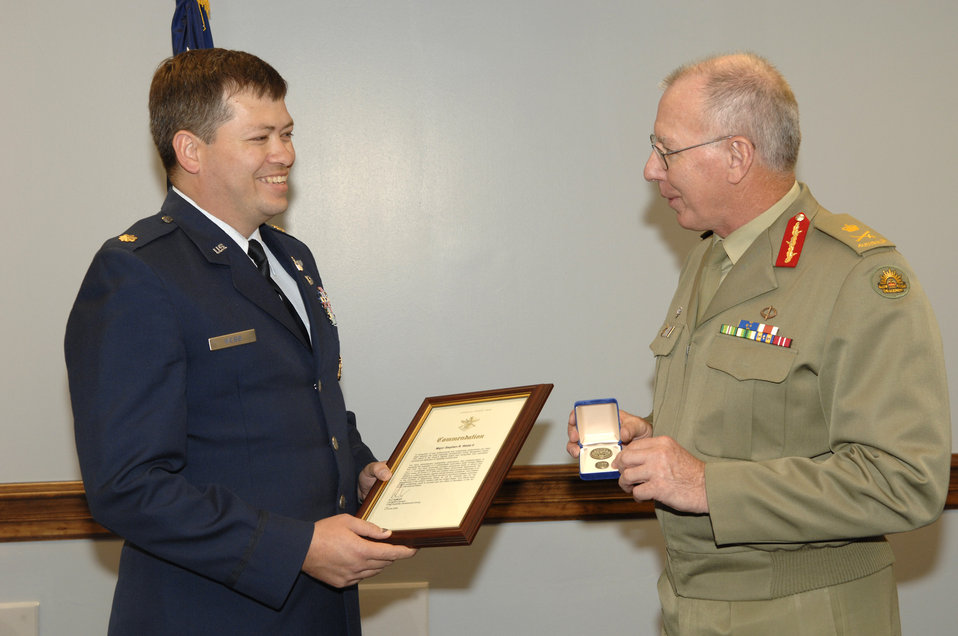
Australian official recognizes international affairs officer

Australian Army Lt. Gen. David Hurley presents the Capability Development Group Commendation Award to Maj. Steven Webb on behalf of the Australian Department of Defense Dec. 11 at the Pentagon. Major Webb, an international affairs officer, received the award for his successful efforts in helpign bring the C-17 Globemaster III to the Australian fleet.